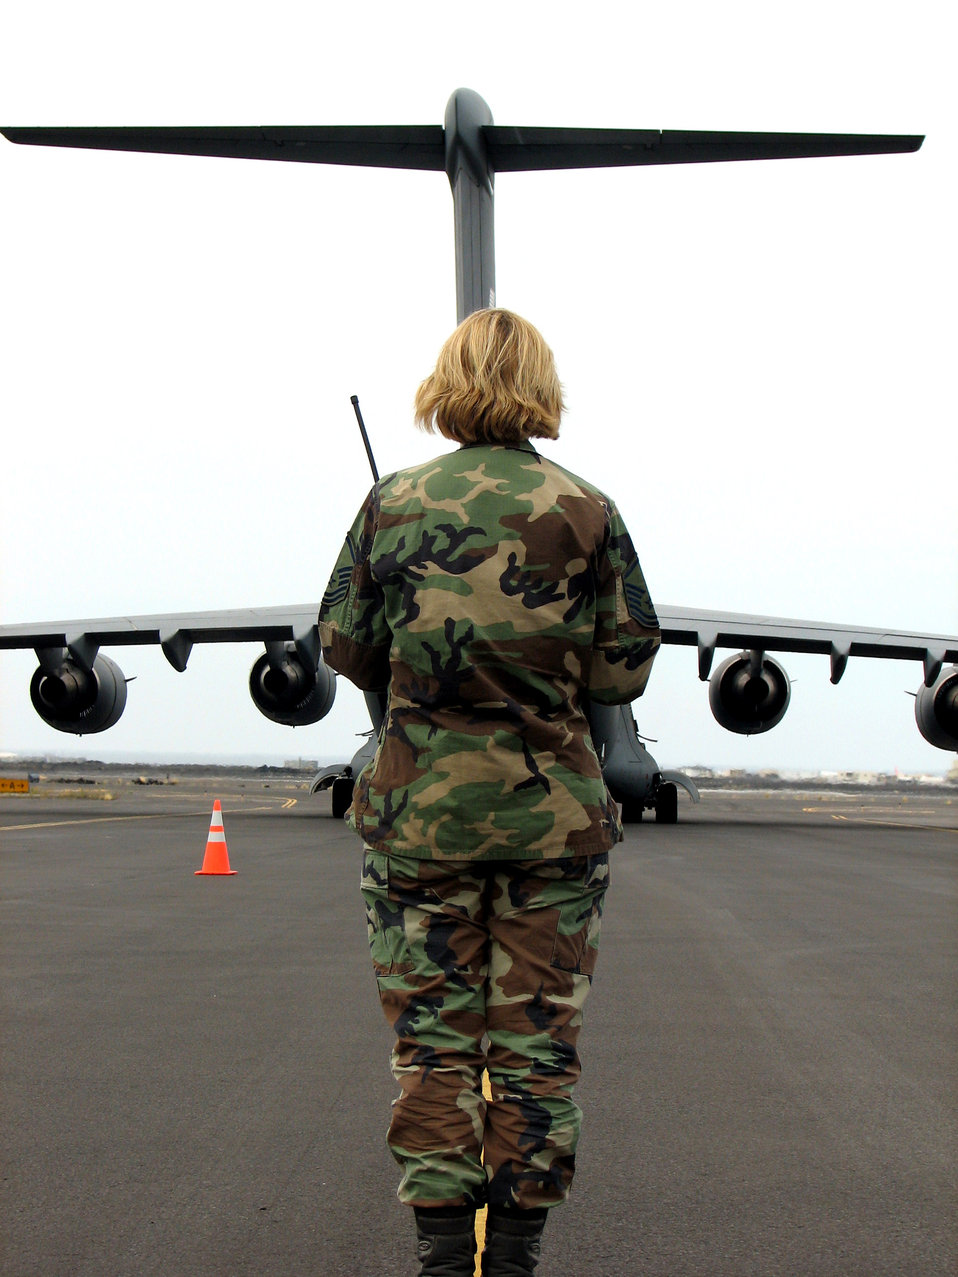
Pacific Lifeline tests humanitarian relief concept

Master Sgt. Christina Bolle greets an arriving C-17 Globemaster III during an aeromedical transport mission Feb. 2 at the Kona International Airport in Kona, Hawaii. The 36th Contingency Response Group deployed more than 85 Airmen to Kona who set-up and provided base operational support including security, airfield management, water and power production, food services and a tent city capable of housing 300 during exercise Pacific Lifeline. Sergeant Bolle is an airfield manager with the 36th CRG from Andersen Air Force Base, Guam.